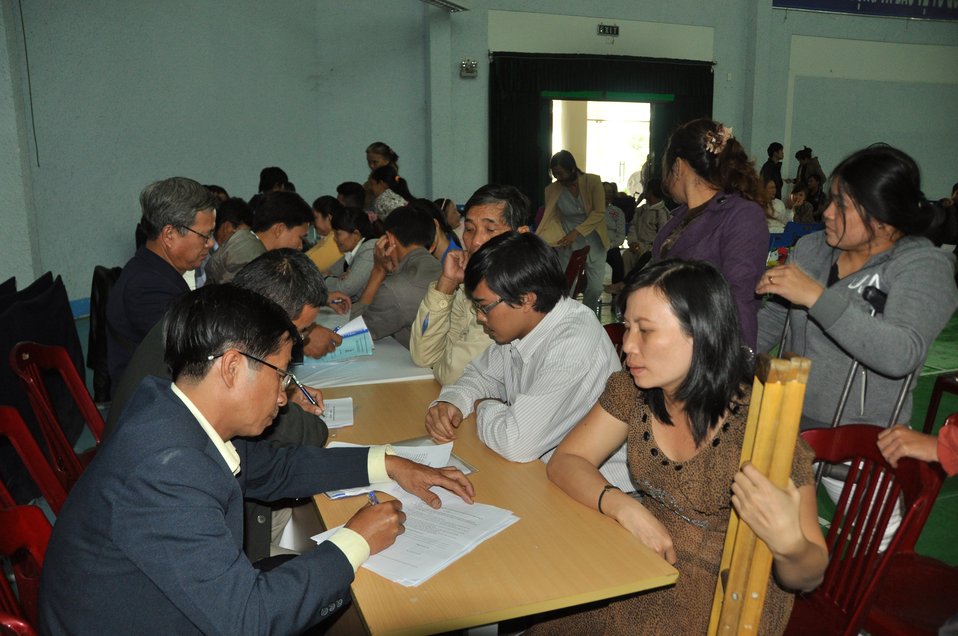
USAID supports the survey of PWD satisfaction with disability services.

Danang, December 3, 2013.